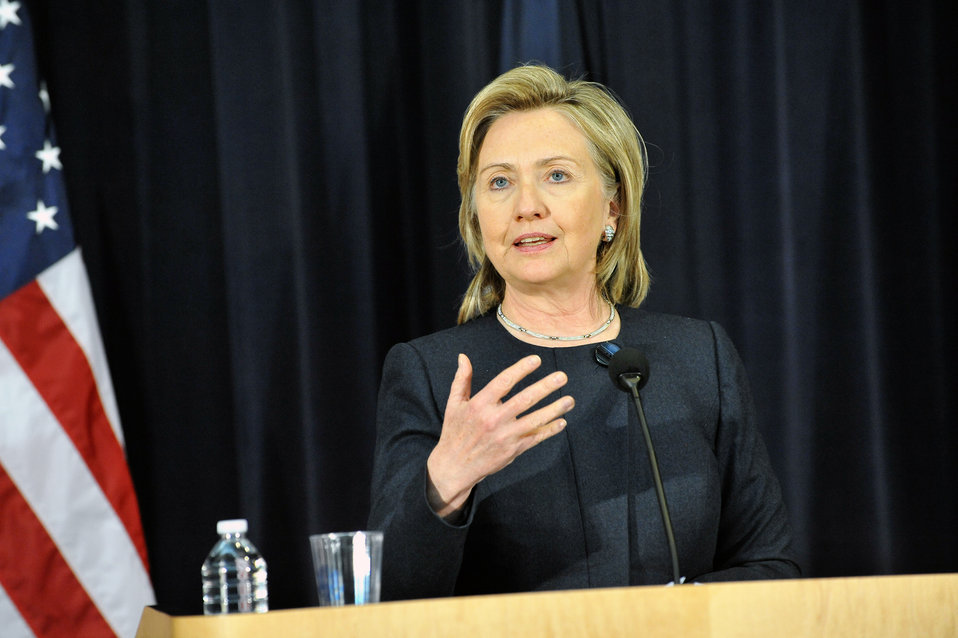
Secretary Clinton Delivers Remarks at the Human Rights Day Town Hall Meeting

U.S. Secretary of State Hillary Rodham Clinton delivers remarks at the Human Rights Day Town Hall Meeting with civil society organizations at the U.S. Department of State in Washington, D.C., on December 10, 2010.